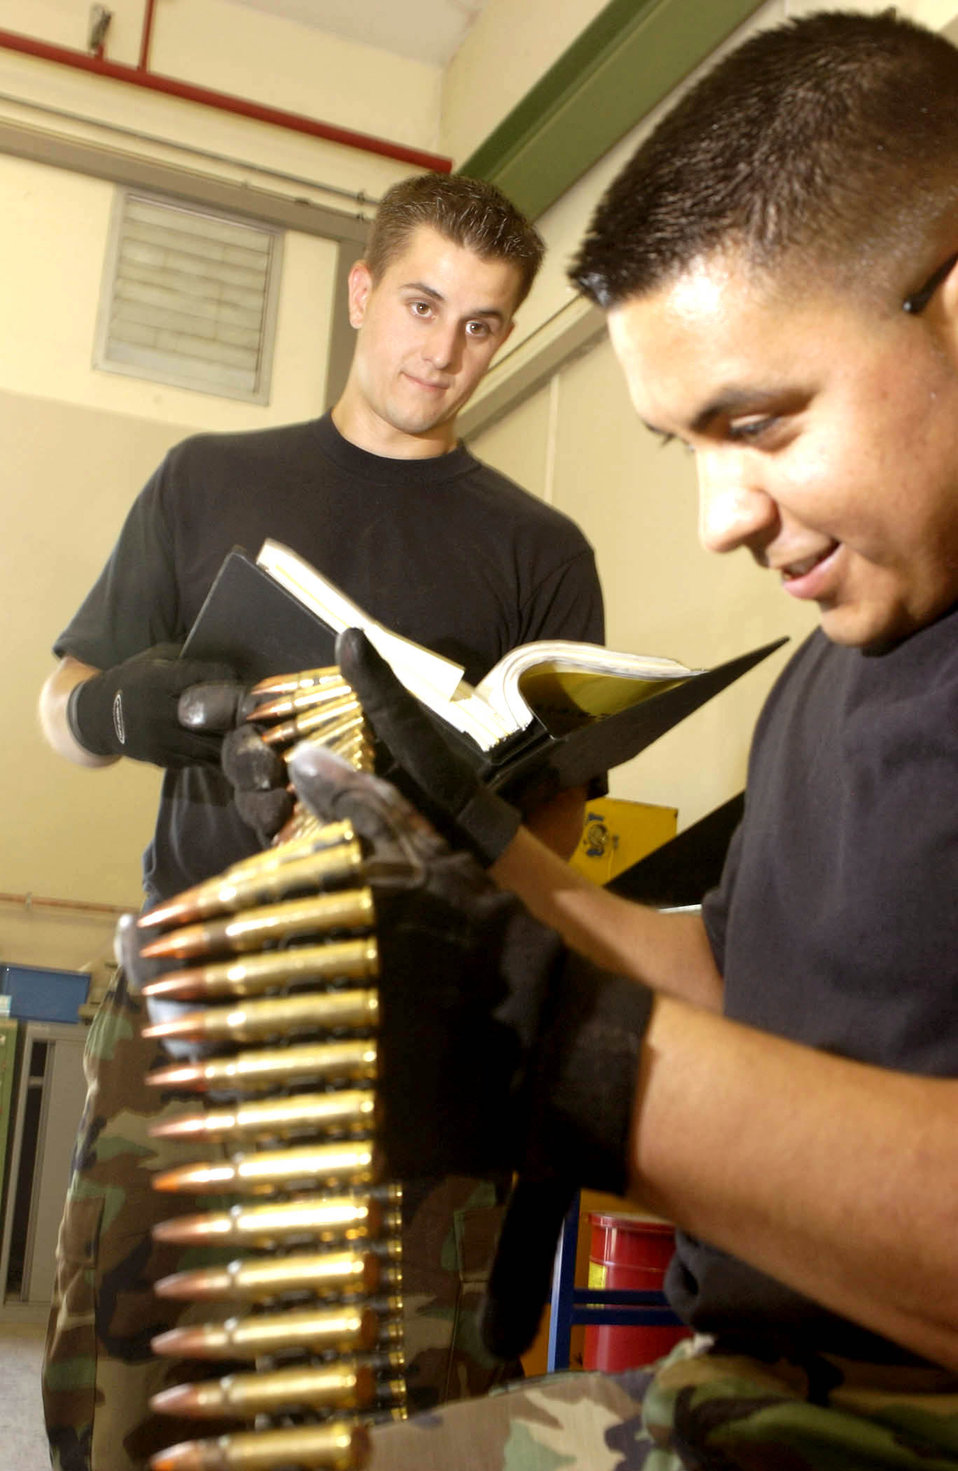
Line 'em up

RAMSTEIN AIR BASE, Germany -- Staff Sgt. Tony Gallegos inspects rounds as Airman 1st Class Shawn Leyva refers to the technical order. Airman Leyva is participating in a two-week munitions inspection class conducted by Sergeant Gallegos. All munitions returned to the depot here are inspected before being stored. Sergeant Gallegos is a munitions inspector with the 435th Munitions Squadron.